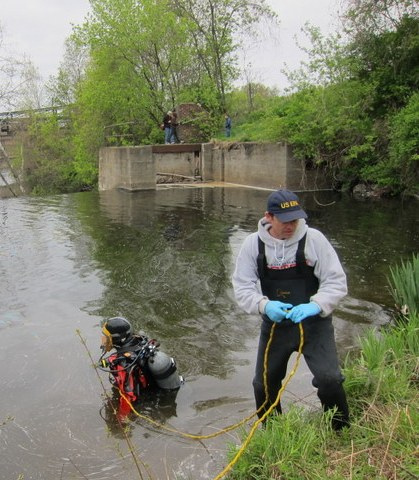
May 2012, Trying not to disturb contaminated sediment

As the diver collects sediment core samples it's hard not to disturb the bottom 'mud' which causes oil sheens to appear.

Coal tar from the Former Synergy Manufactured Gas Plant has migrated from contaminated soil and groundwater into the Sugar River.

The yellow rope you see is a Comm line or communications rope. In these conditions, you would want to be attached to that rope... As the river not only has a current, but there is also a dam overflow just below the site.

A third person (not pictured) known as the dive master, is talking to the diver via the comm rope and taking notes as the diver describes the river bottom and takes samples. The tender is responsible for the safety of the diver.